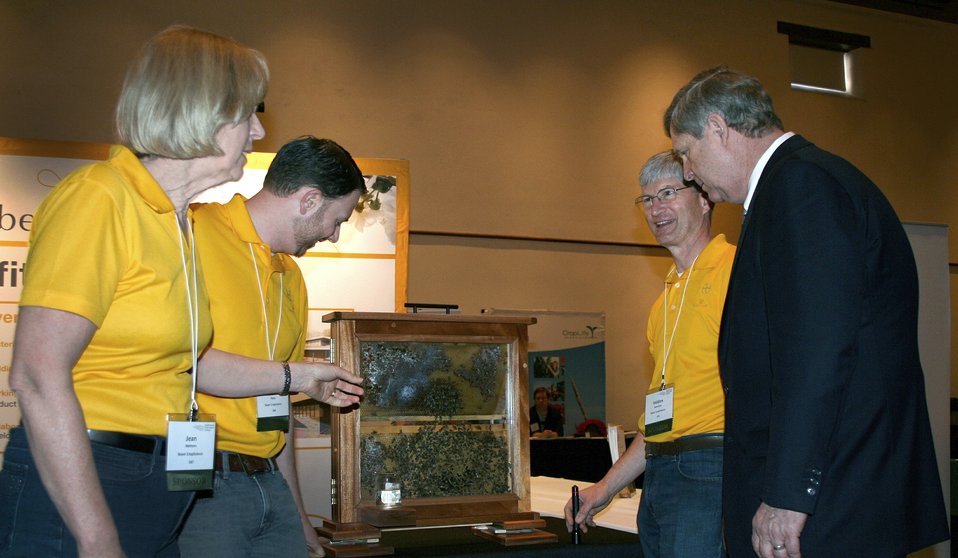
(L to R) Beyer Corporation employees Jean Meimers, Matt Perin and Veldon Sorenson discuss honey bees with Agriculture Secretary Tom Vilsack during his visit to the National Farmers Union Conference in Santa Fe, NM on Monday, Mar. 10, 2014.